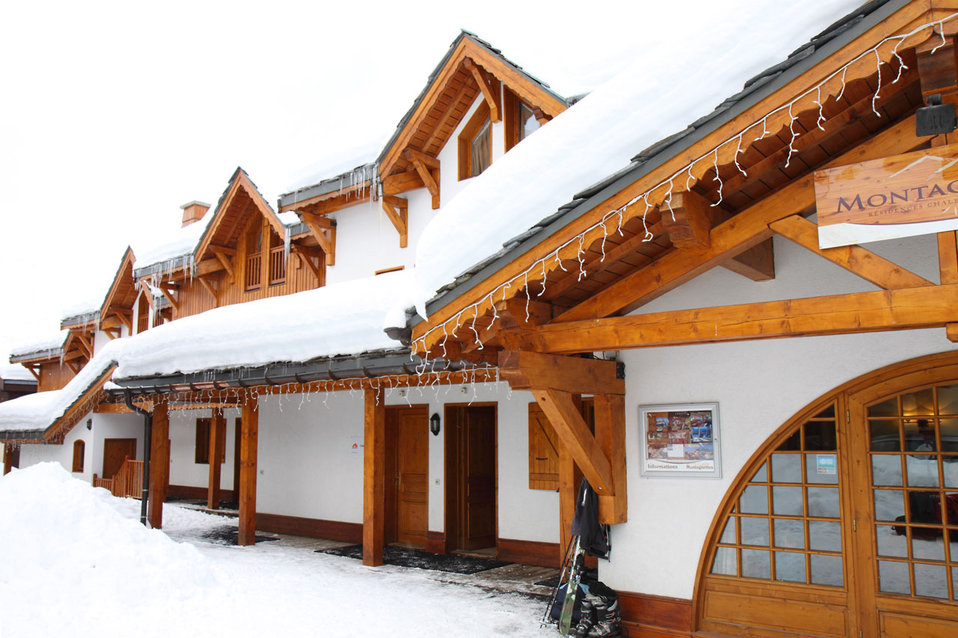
Chalet in winter

Wooden chalet in winter.